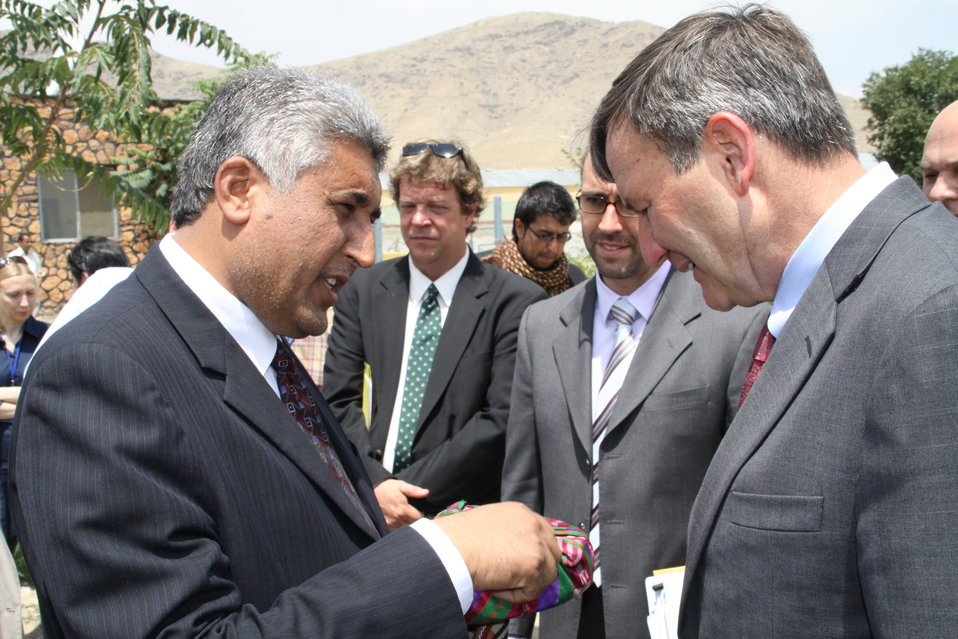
Badam Bagh Farm